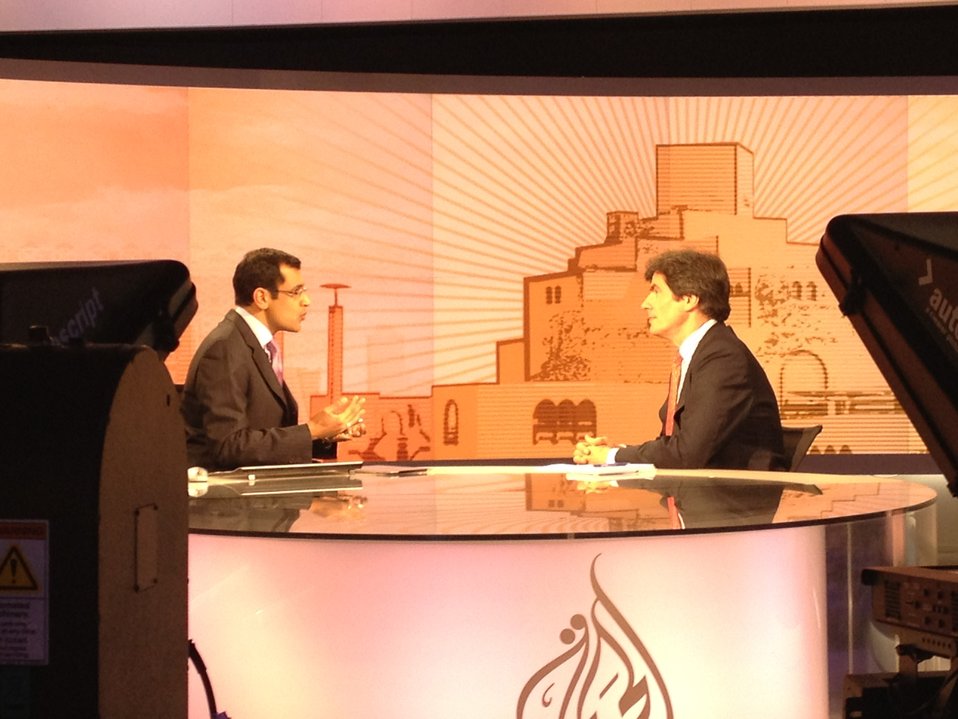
Assistant Secretary Fernandez Participates in an Al Jazeera Interview

Assistant Secretary of State for Economic and Business Affairs Jose Fernandez participates in an interview on the Al Jazeera English program, “Counting the Cost,' in Doha, Qatar, on February 28, 2012.